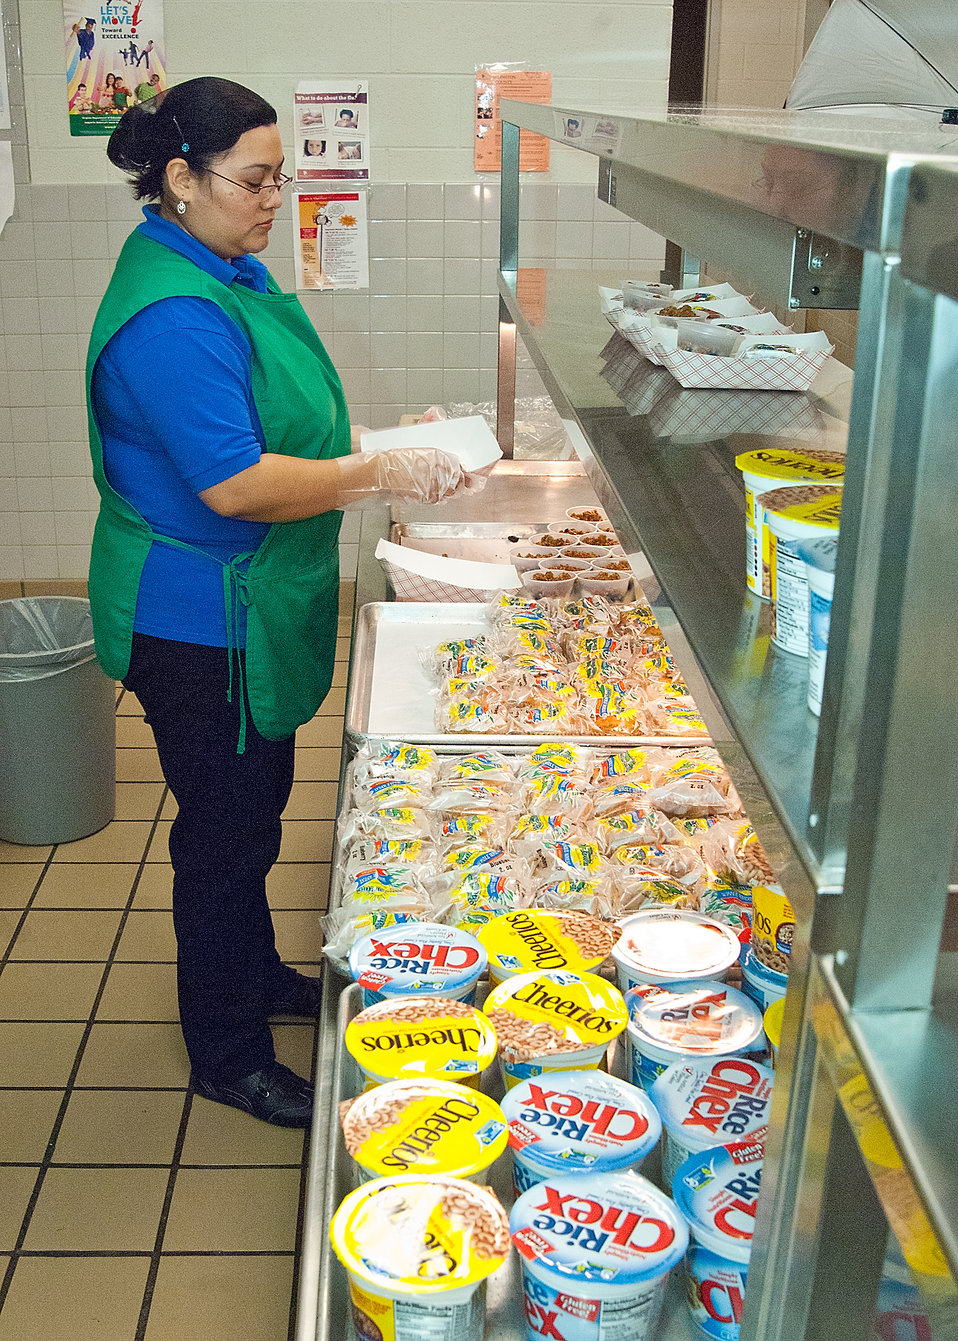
Rosalba Gomez, Arlington Food Services prepares trays of parfait cups with yogurt, fruit and granola and blueberry muffins for the National School Lunch Program at Washington-Lee High School in Arlington, Virginia, on Wednesday, October 25, 2011. The National School Lunch Program is a federally assisted meal program administered by the United States Department of Agriculture, Food and Nutrition Service operating in public, nonprofit private schools and residential child care institutions. It provides nutritionally balanced, low-cost or free lunches to children each school day.